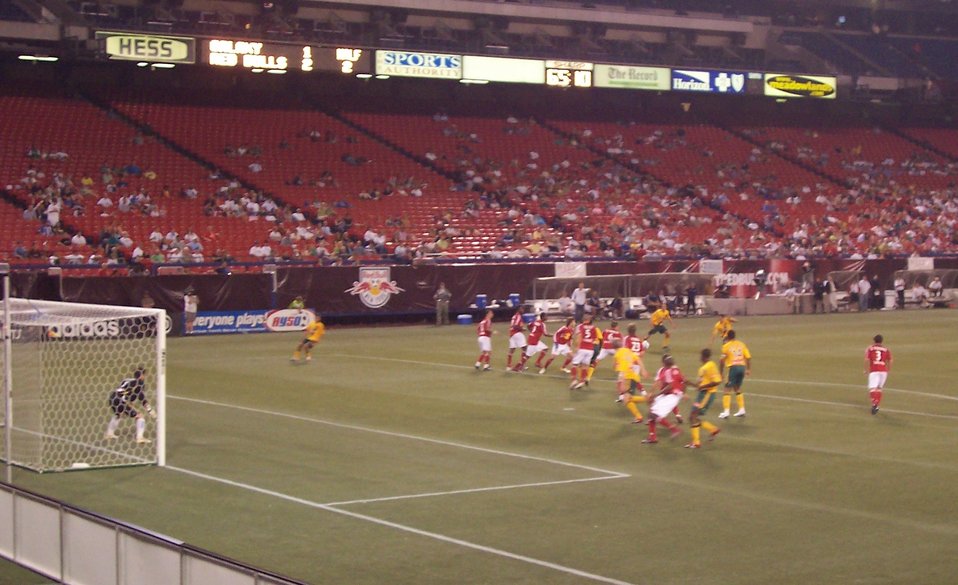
The Los Angeles Galaxy vs. New York Red Bulls on 17 June 2006.